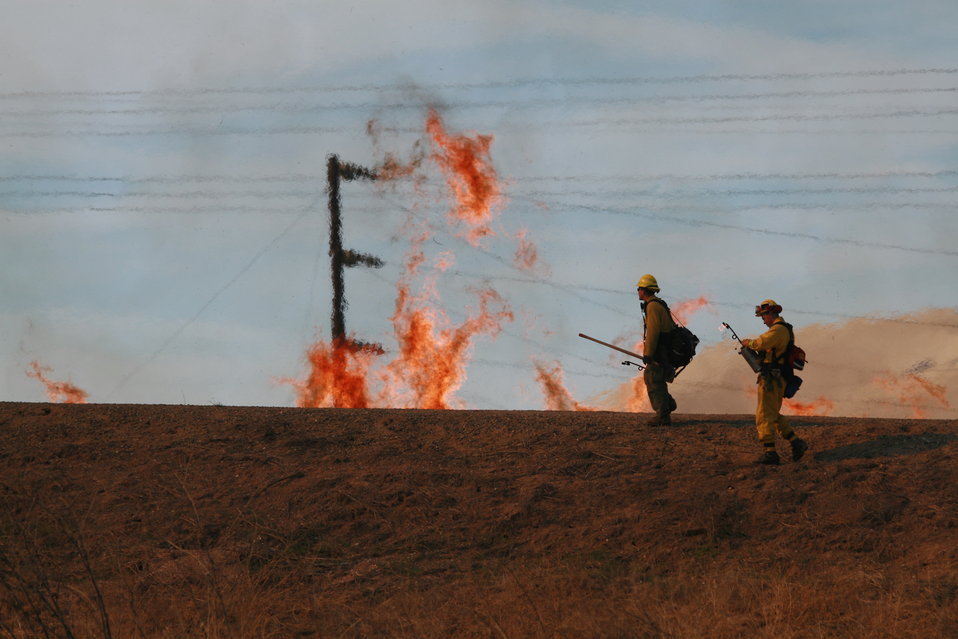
Controlled burn at Success Lake

Firefighters with the California Department of Forestry and Fire Protection’s Tulare Station start a controlled burn at Success Lake near Porterville, Calif., Nov. 3, 2011. Success Lake is managed by the U.S. Army Corps of Engineers Sacramento District. The exercise removed invasive weeds from the face of Success Dam and a nearby wilderness area, making maintenance and inspection easier and cheaper for the Corps, and providing hands-on training for the firefighters.